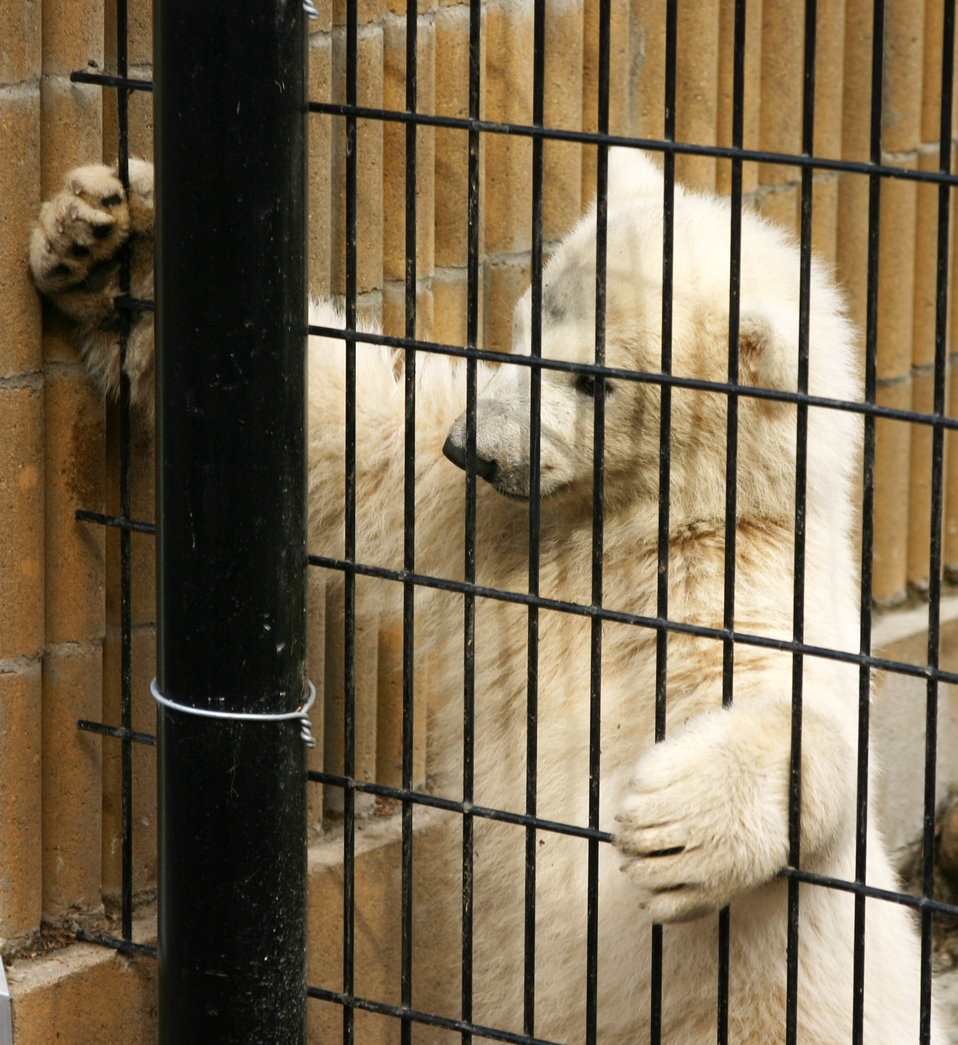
Kali peering out 01

Kali at the Alaska Zoo Kali at the Alaska Zoo.